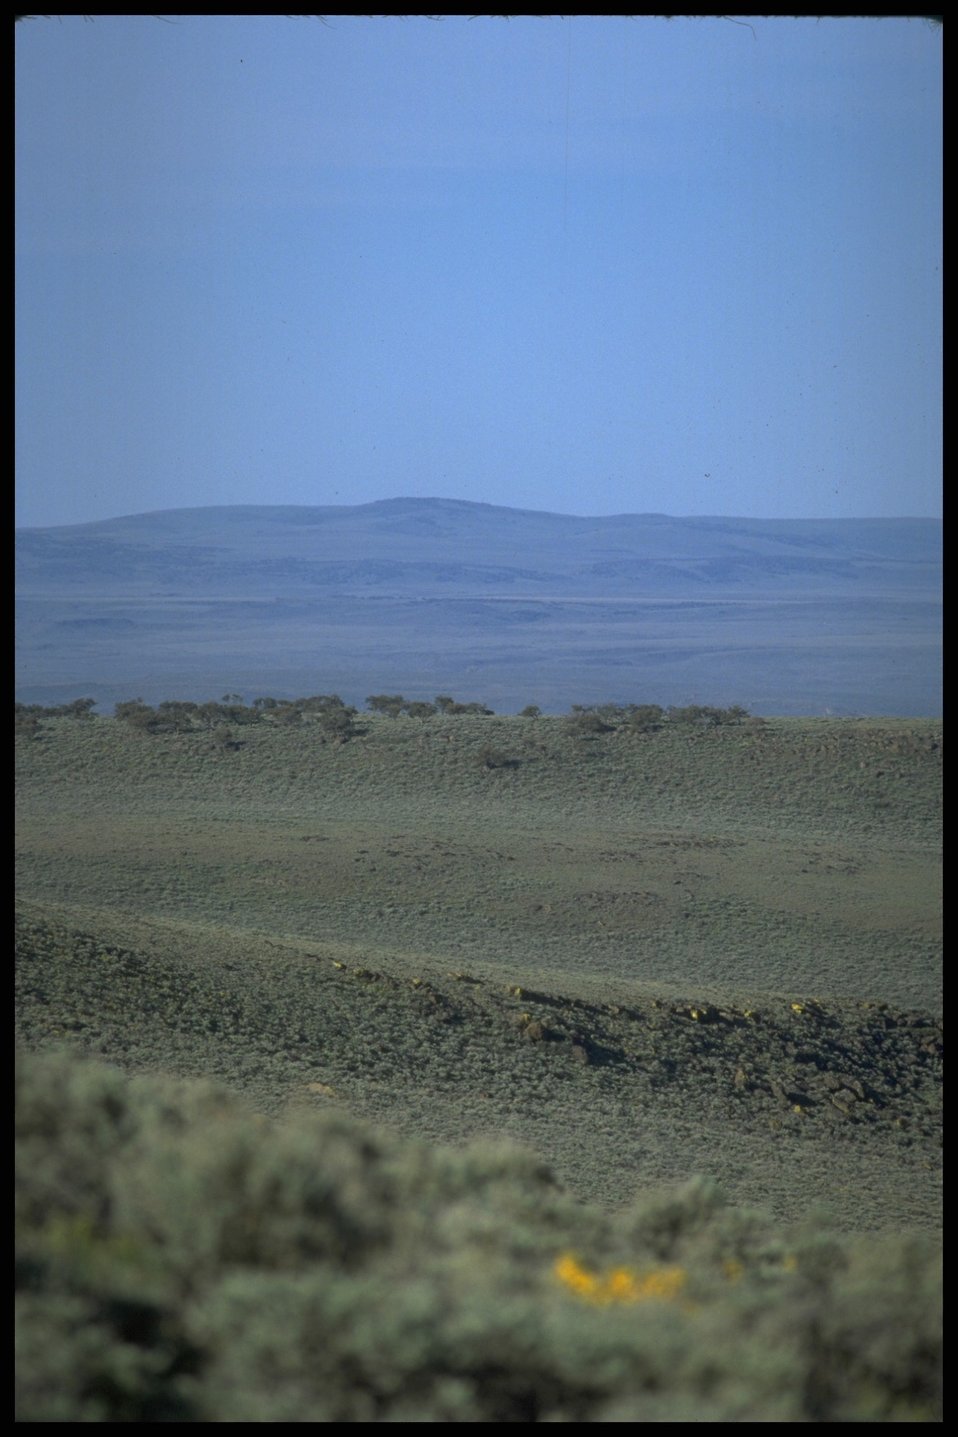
Scenic landscape, Lakeview District.